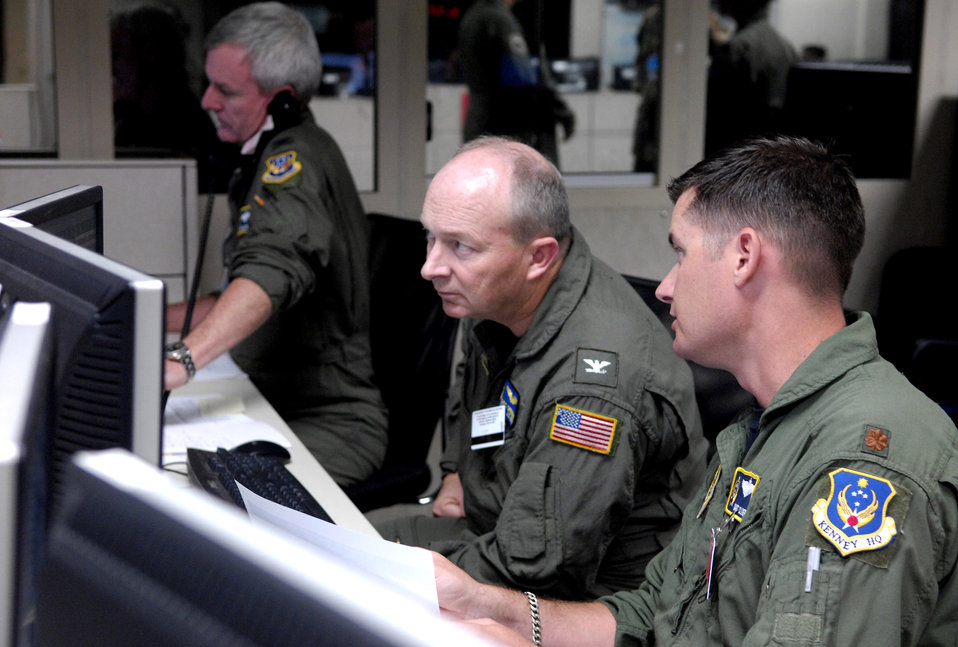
Ops center commands sky during Exercise Valiant Shield

Joint servicemembers coordinate air assets during Exercise Valiant Shield Aug. 7 in the Air and Space Operation Center at Hickam Air Force Base, Hawaii. Valiant Shield is a week-long exercise that tests the military's ability to rapidly consolidate joint forces in response to regional contingencies, involves approximately 22,000 troops, 30 ships and some 275 aircraft.